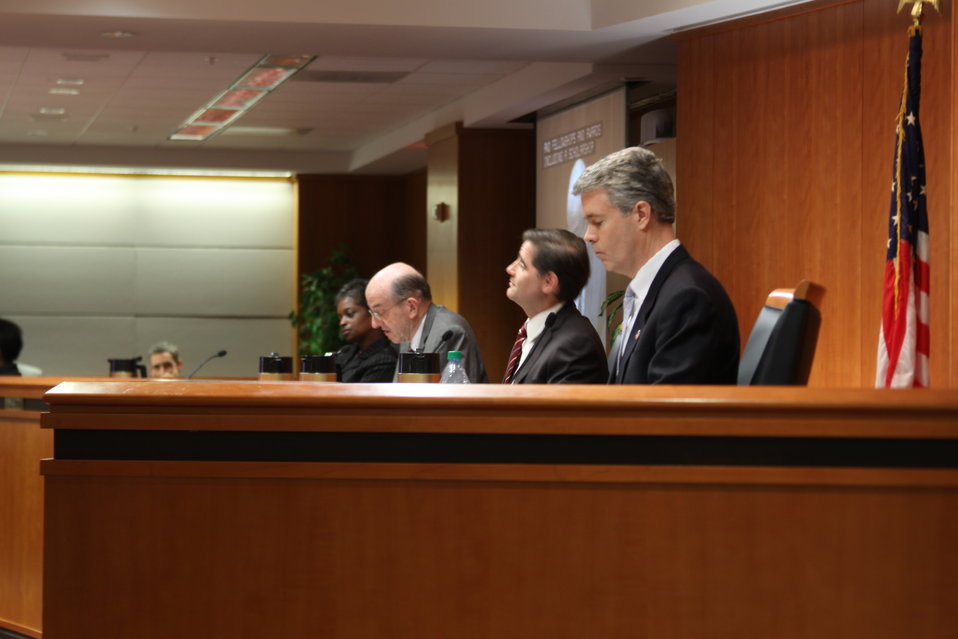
7/12/2011 Open Commission Meeting

Commissioner Mignon L. Clyburn, Commissioner Michael J. Copps, Chairman Julius Genachowski, and Commissioner Robert M. McDowell at the July 2011 Open Commission Meeting